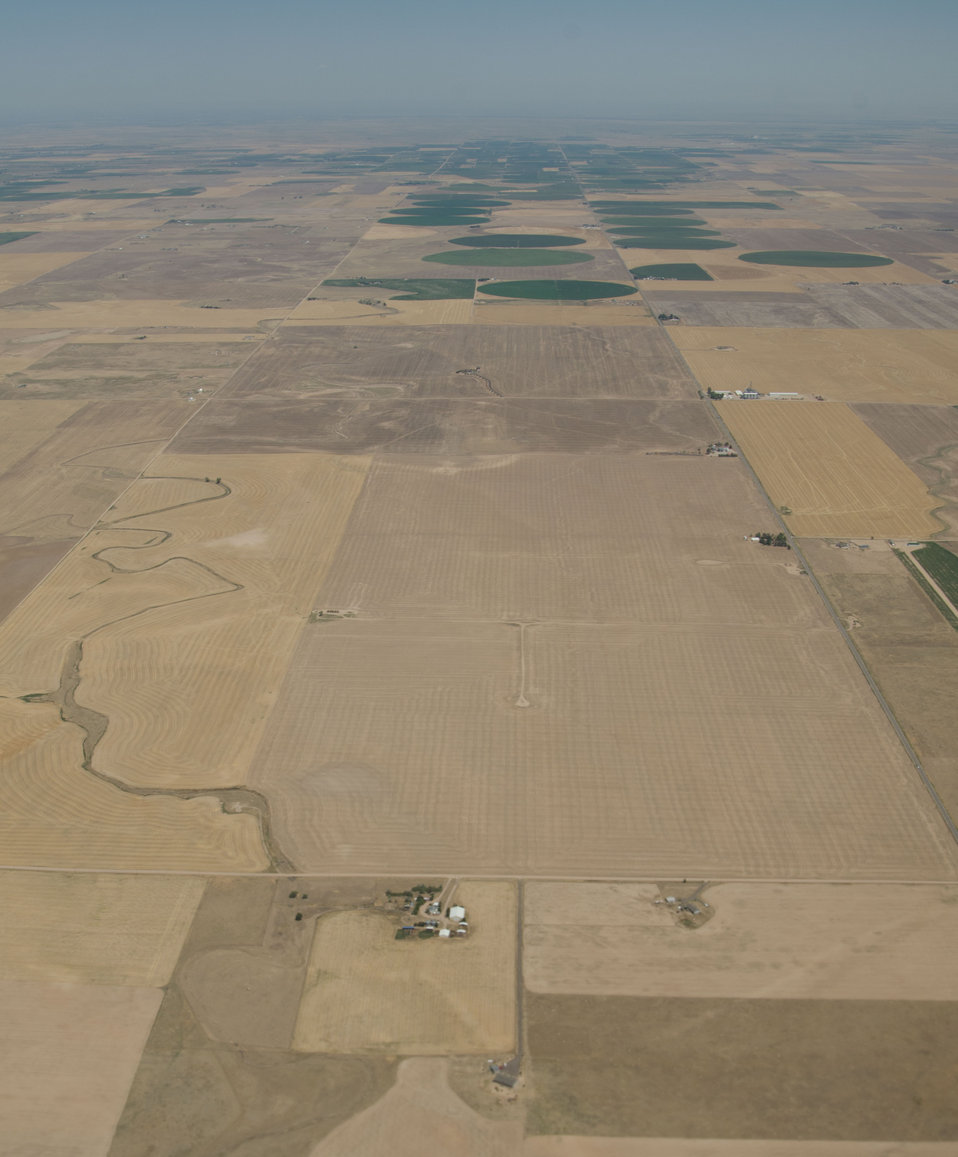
Aerial views of drought affected Colorado farm lands, 76 miles east of Denver, Colorado on Saturday, July 21, 2012.